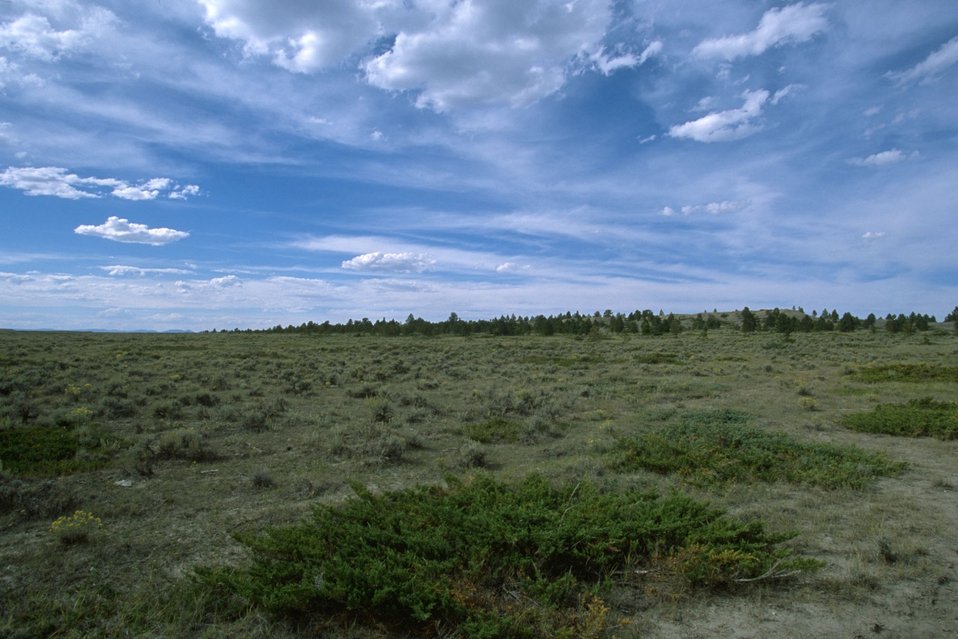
Acid Shale Area of Critical Environmental Concern (ACEC)